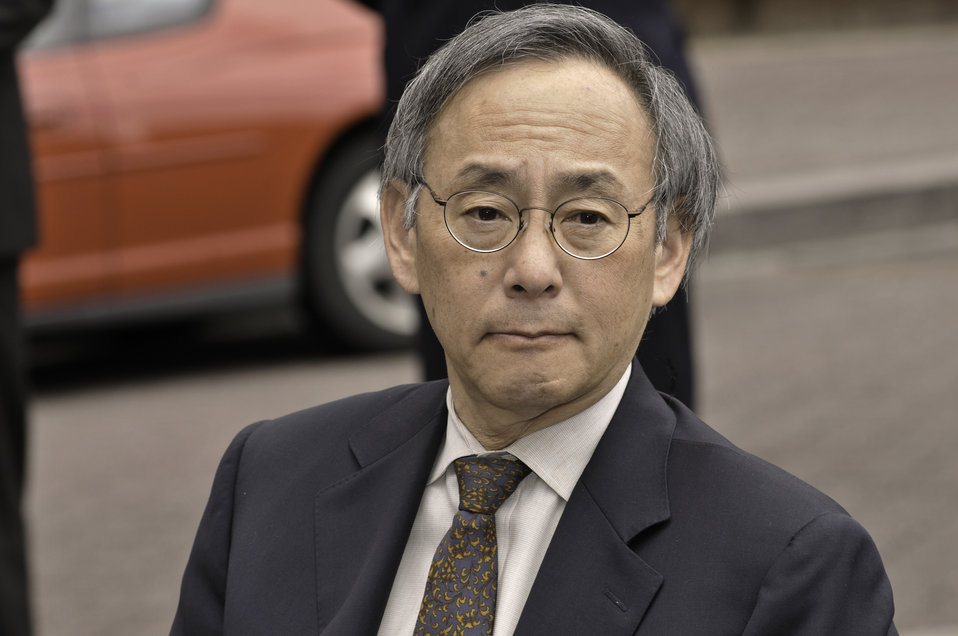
Clean Fleets Announcement 3 of 14

Sec. Steven Chu inspects a Chevy Volt newly purchased as part of the Department of Energy Fleet.